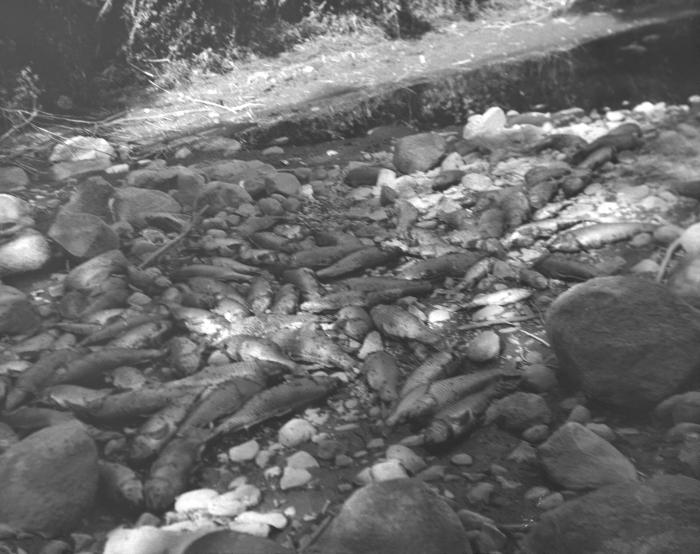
In this historic 1931 photograph, a large number of fish were shown dead on the banks of the Minnesota River, after having been killed when industrial waste entered their environment from a nearby canning plant near Ortonville, Minnesota.